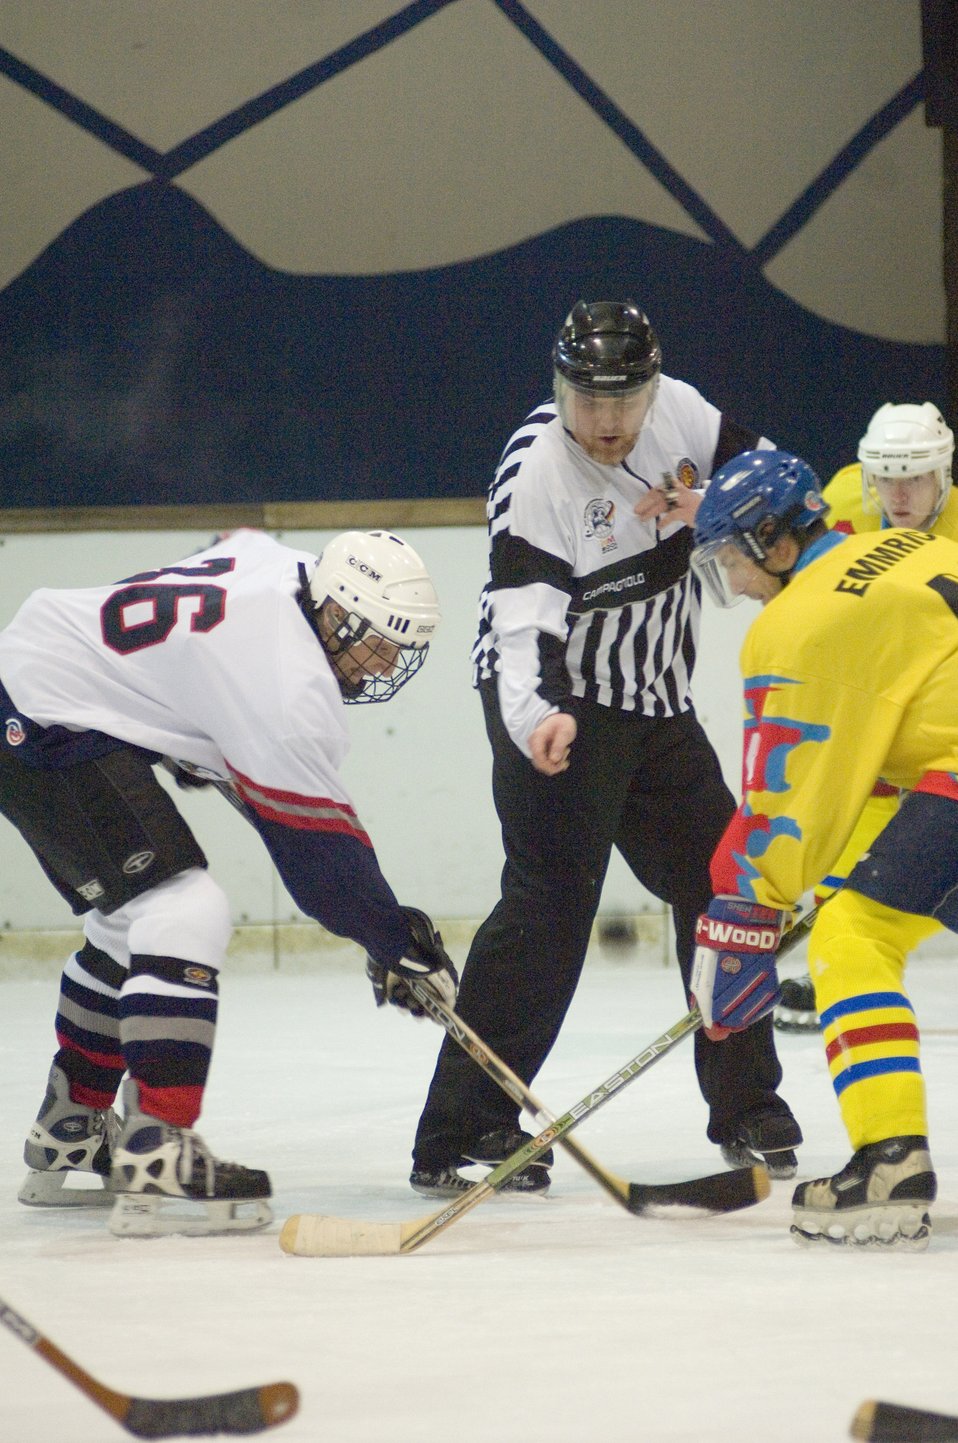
Eagles glide toward tourney

EPPELHEIM, Germany (AFPN) -- The referee drops the puck to restart play as Capt. Kris Uber (left) faces off against a player from the Eppelheim Hawks. The KMC Eagles won 6-4. The Kaiserslautern Military Community hockey team is made up of 30 players in different skill levels varying from semi-pro and college to players experiencing their first organized game. Captain Uber is with the 76th Airlift Squadron at Ramstein Air Base, Germany.